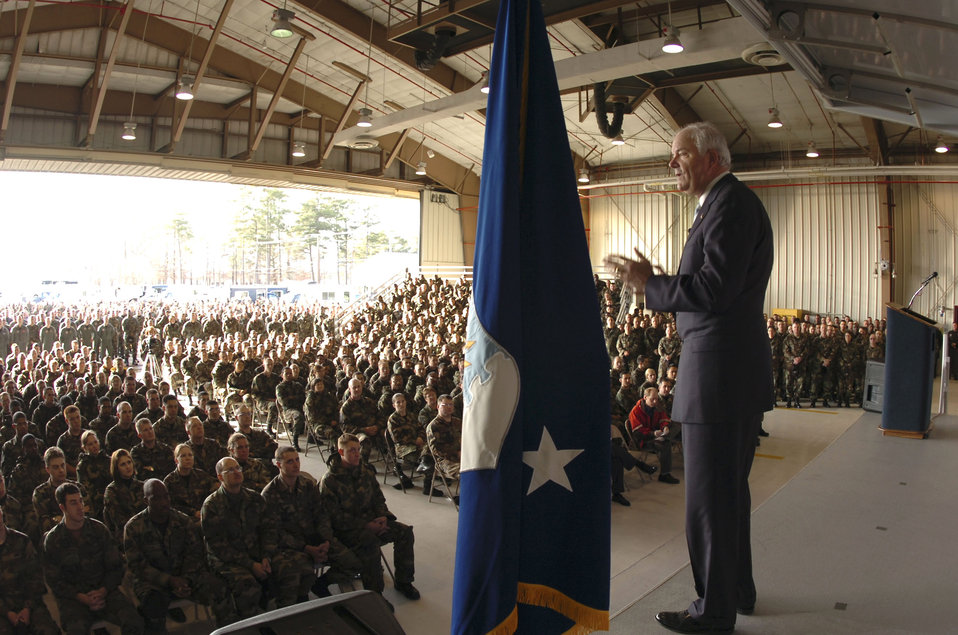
SECAF visits Seymour Johnson AFB

Secretary of the Air Force Michael W. Wynne speaks to the Airmen of the 4th Fighter Wing about the Air Force's efforts to help meet the immediate demands of fighting the war on terrorism as part of the joint interdependent team during an Airmen's Call Jan. 19 at Seymour Johnson Air Force Base, N.C.